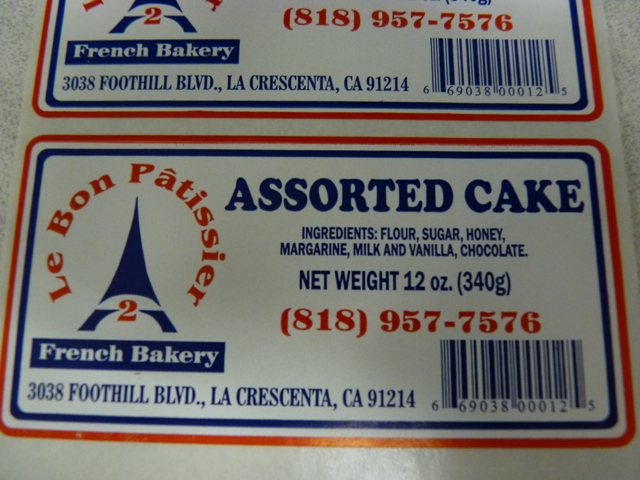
RECALLED - Pastry Products

April 5, 2011 – Product Recall – Le Bon Patissiere-2, Inc. Announces Voluntary Recall On Select Le Bon Patissiere Products That Contain Undeclared Allergens.